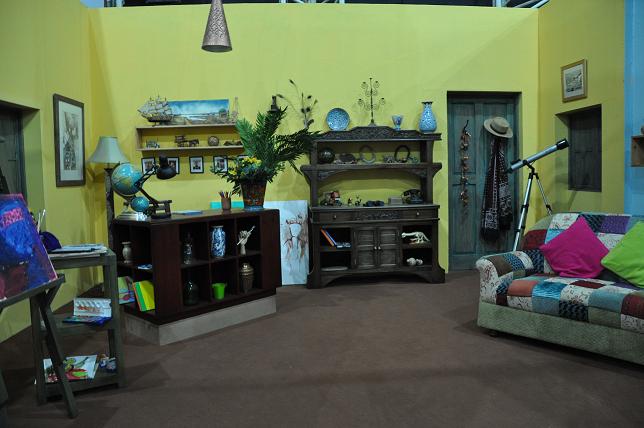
Sim Sim Hamara set.